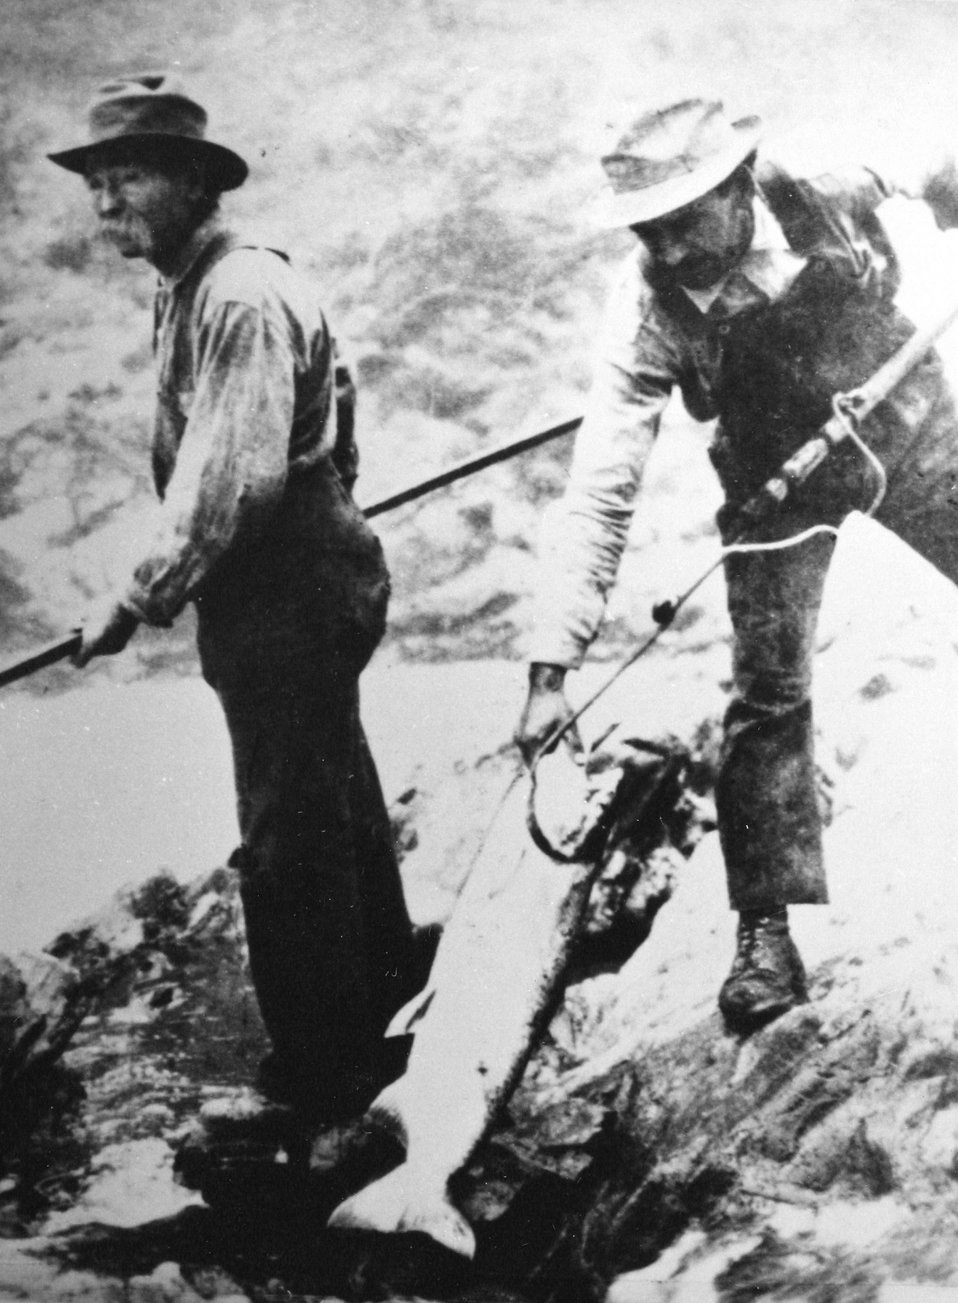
J. N. Rainey on the left and George Stone fishing at Rainie Falls.